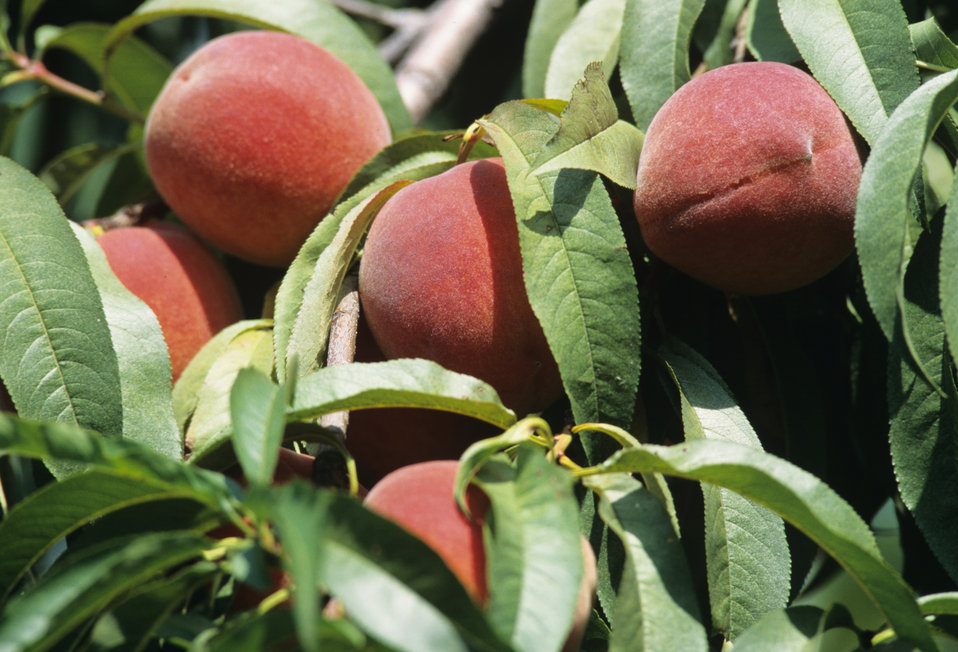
Peaches on the Williams Manor Peach Orchard in Morrisville, VA are ready for picking in mid August 1995.